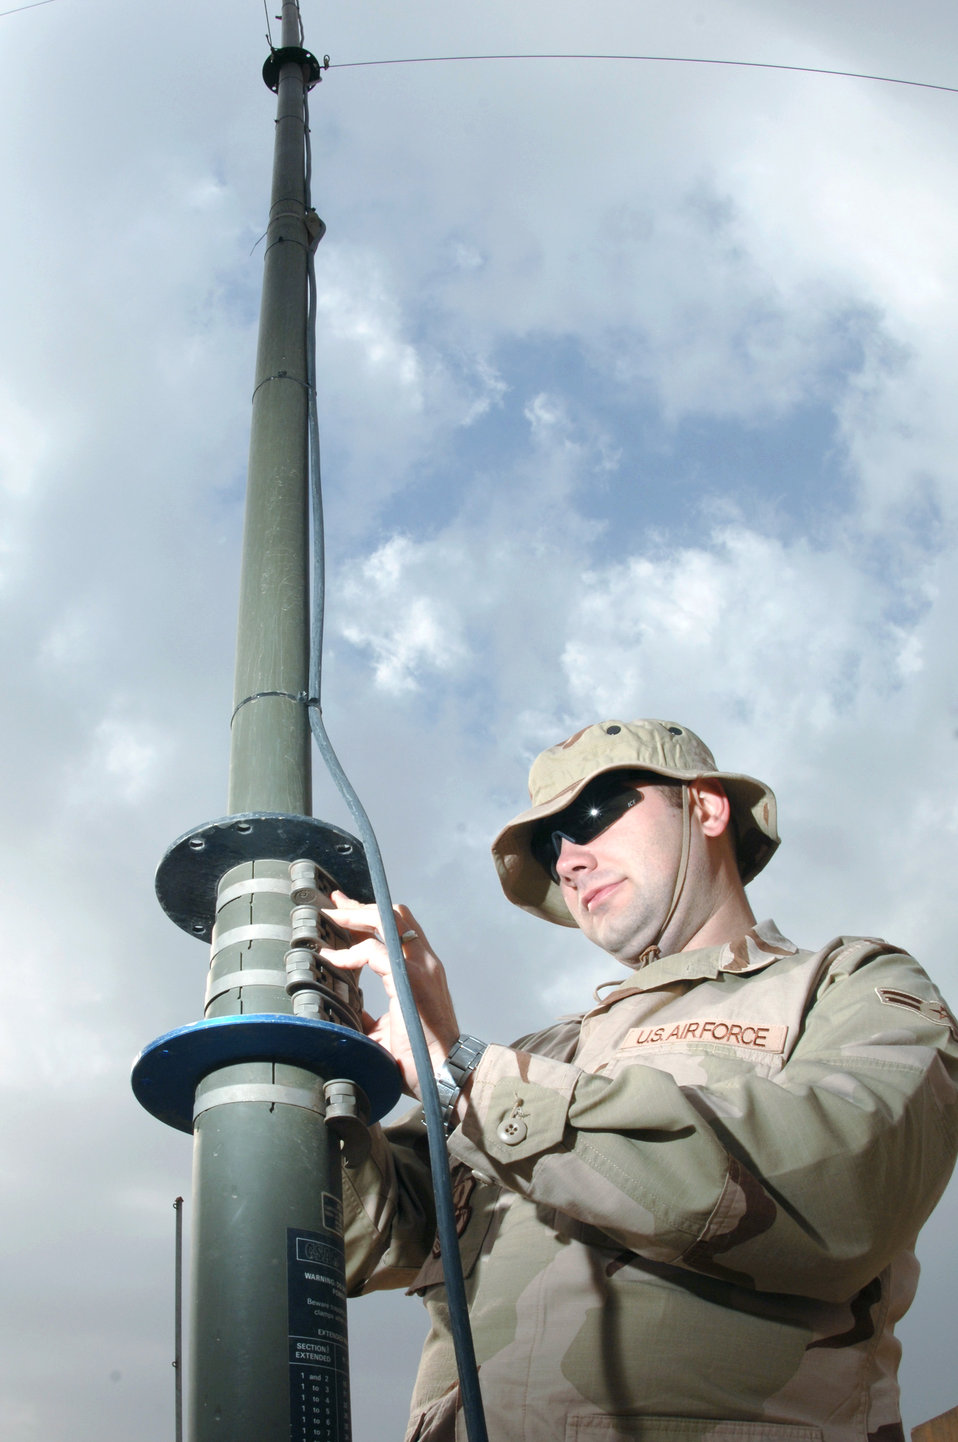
Lines of communication

Airman 1st Class Benjamin Murphy stands up an antenna mast pole Jan. 30 at Kirkuk Regional Air Base, Iraq. The mast pole is used to elevate antennas as high as possible for longer radio transmitions. Airman Murphy is a ground radio technician assigned to the 506th Expedtionary Communications Squadron.